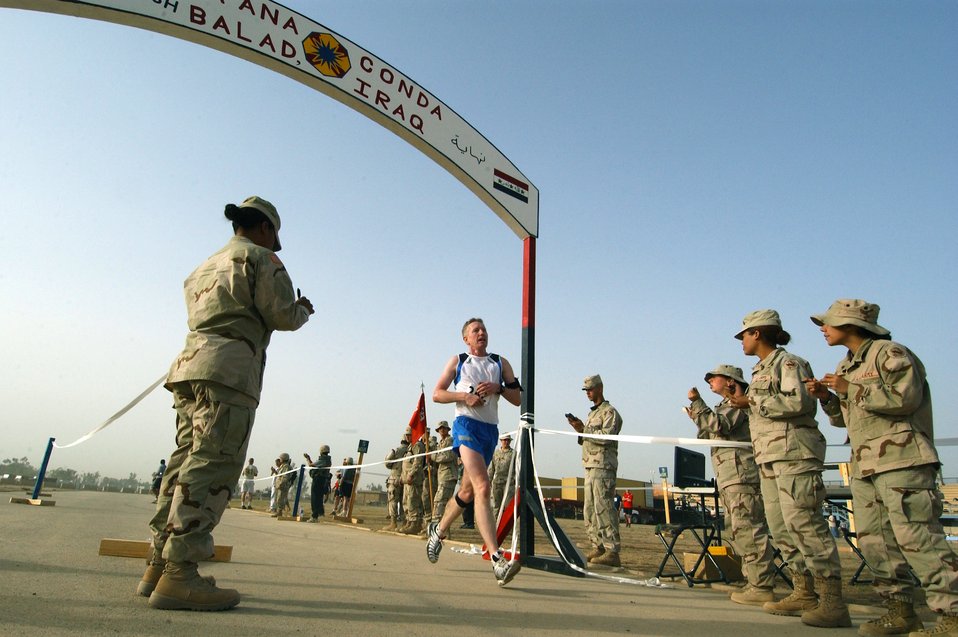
Airmen run in Army '10-miler'

BALAD AIR BASE, Iraq -- Master Sgt. Donald Beaulieu crosses the finish line Oct. 24 at the Logistics Support Area Anaconda 10-Miler. He came in third overall and claimed first place in his age group. Sergeant Beaulieu is assigned to the 332nd Air Expeditionary Wing chapel and is deployed from Tinker Air Force Base, Okla.